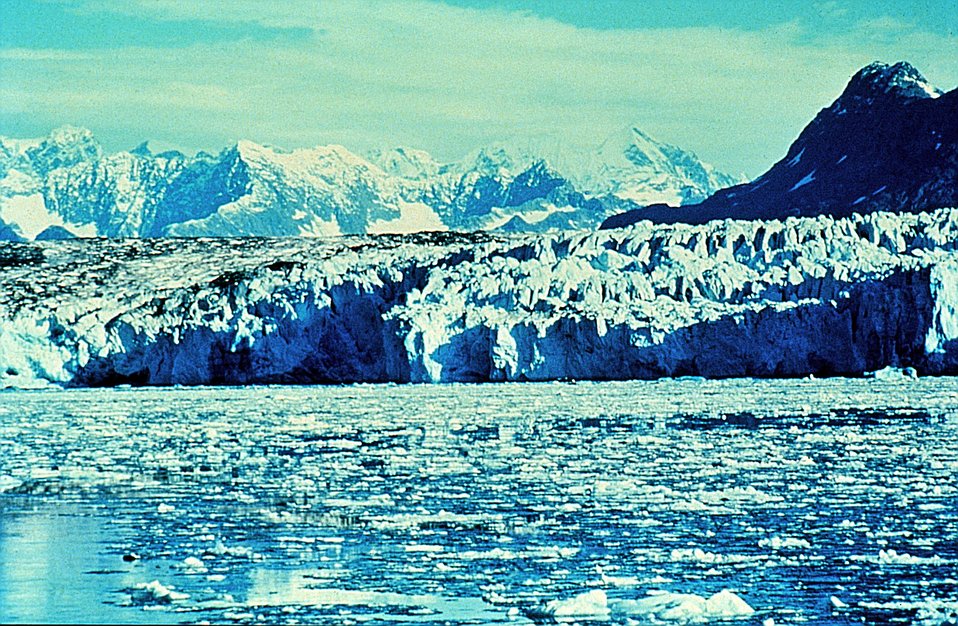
Columbia Glacier,Prince William Sound, Alaska